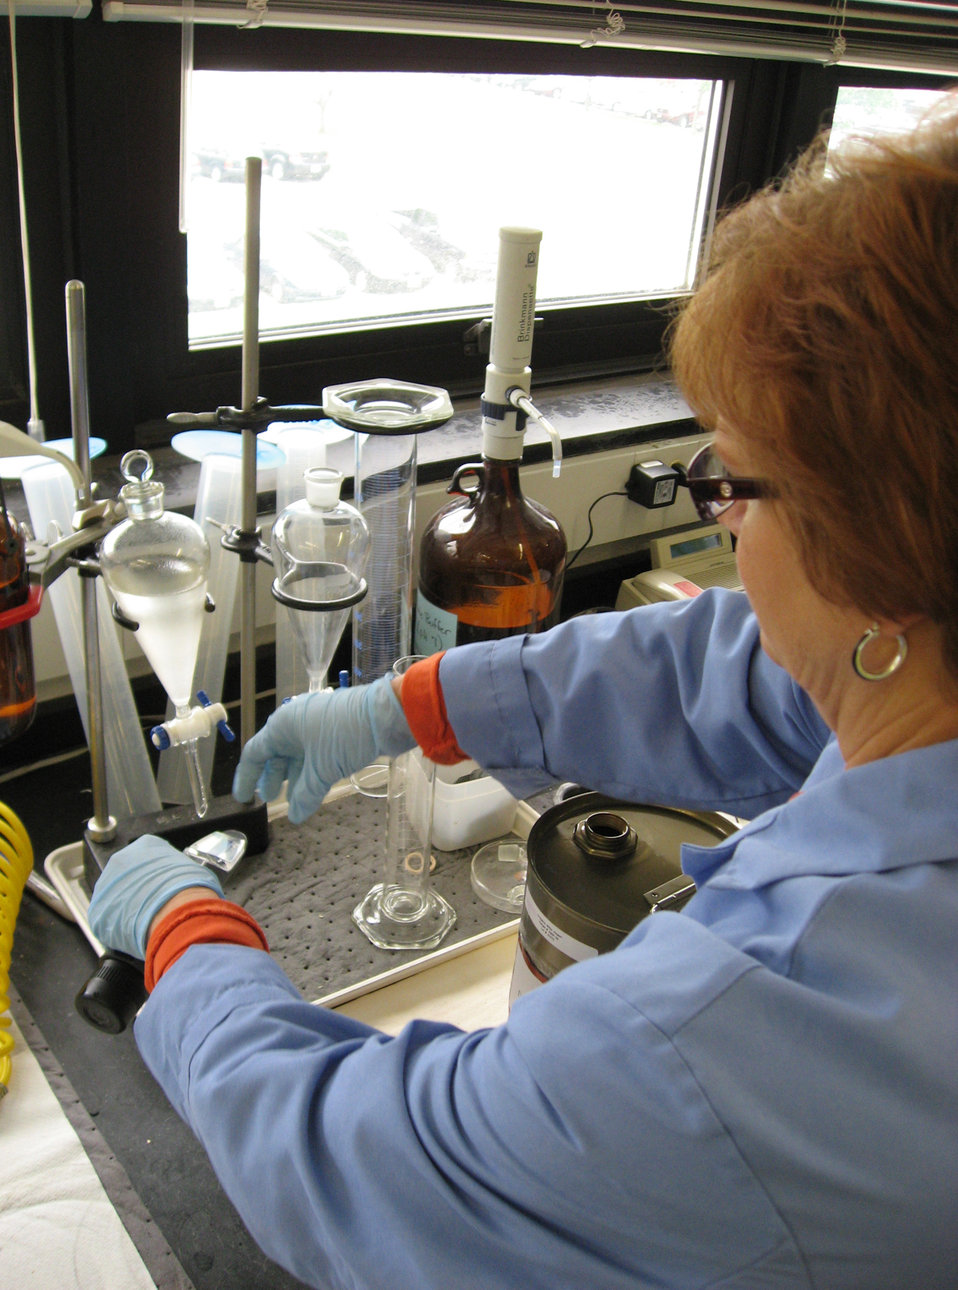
Officials test commercial fuel to replace JP-8 fuel

Janet Stewart tests for the concentration of fuel system icing inhibitor in a sample of commercial Jet A fuel in the Aerospace Fuels Laboratory at Wright-Patterson Air Force Base, Ohio. The Air Force Petroleum Agency and Air Force Research Laboratory researchers are partnering on an initiative to evaluate the use of commercial jet fuel in place of military standard JP-8 fuel. Ms. Stewart is a fuels quality assurance specialist with the Aerospace Fuels Laboratory at Wright-Patterson Air Force Base, Ohio.